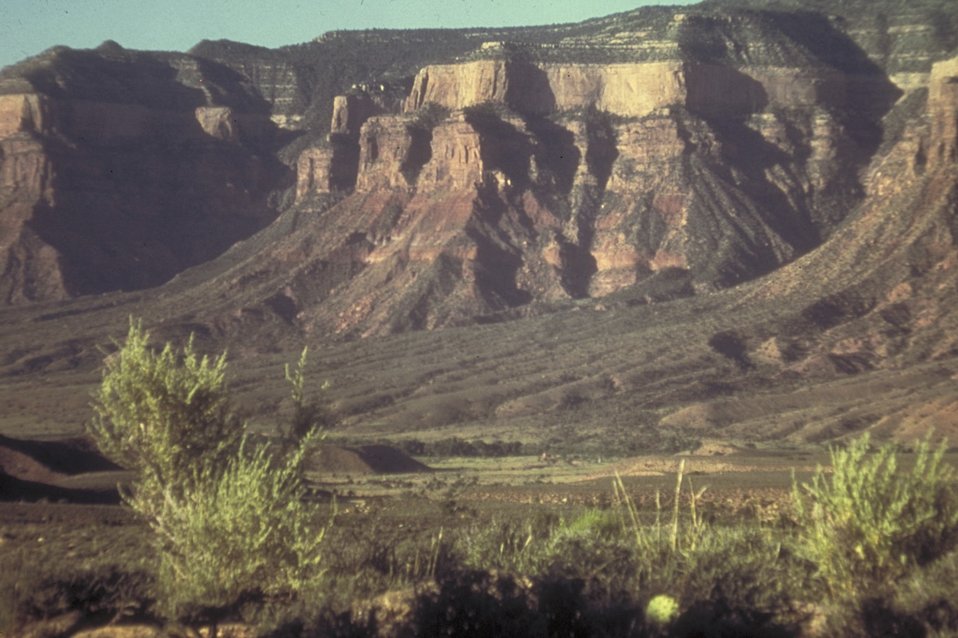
Roan Cliffs